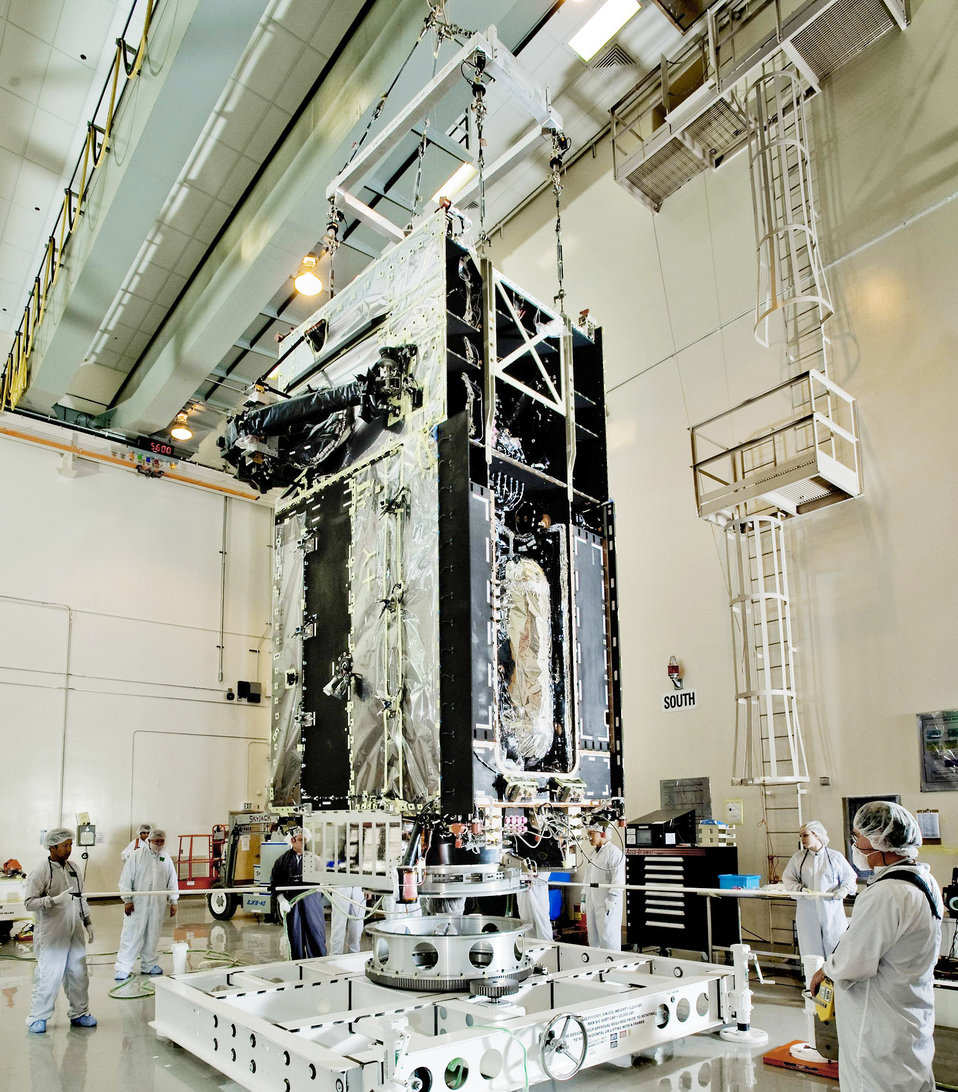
Airmen confirm satellite completes integrated system test

Shown here is the first Space Based Infrared System geosynchronous orbit spacecraft in preparation for final factory work Feb. 10, 2010, at Lockheed Martin's facilities in Sunnyvale, Calif.